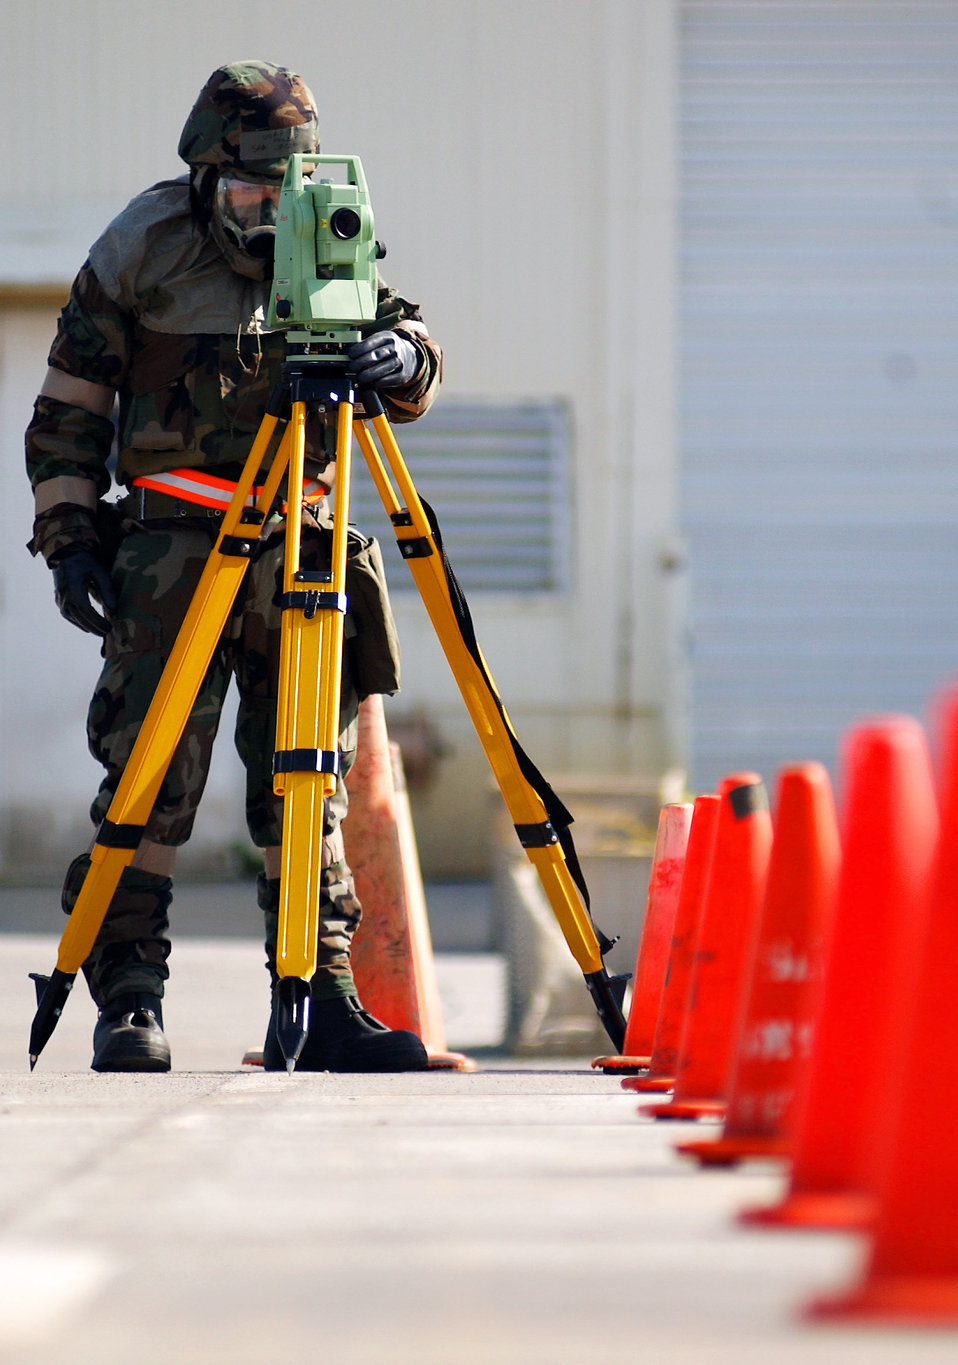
Airmen train for contingency operations during Silver Flag

An Airman uses a theodo light to properly lay out papi lights for pilots to land safely during Silver Flag Nov. 24 at Kadena Air Base, Japan. During the exercise, which is run by Det. 1, 554th RED HORSE Squadron members, Airmen trained to establish and sustain a forward operating base in simulated wartime conditions.